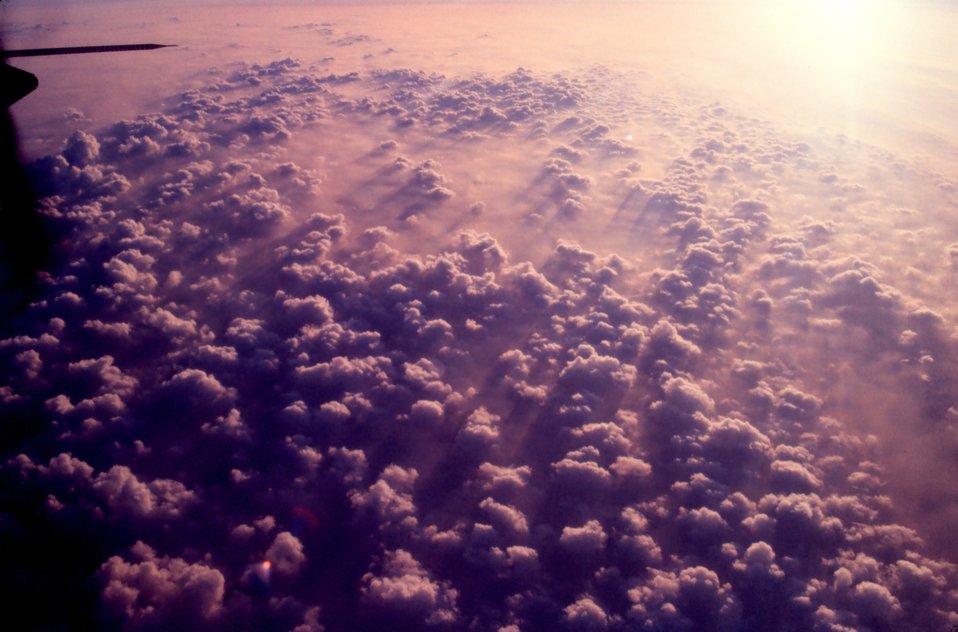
Puffy cumulus illuminated by late afternoon sun far below a NOAA P-3 returning to base at after a mission.